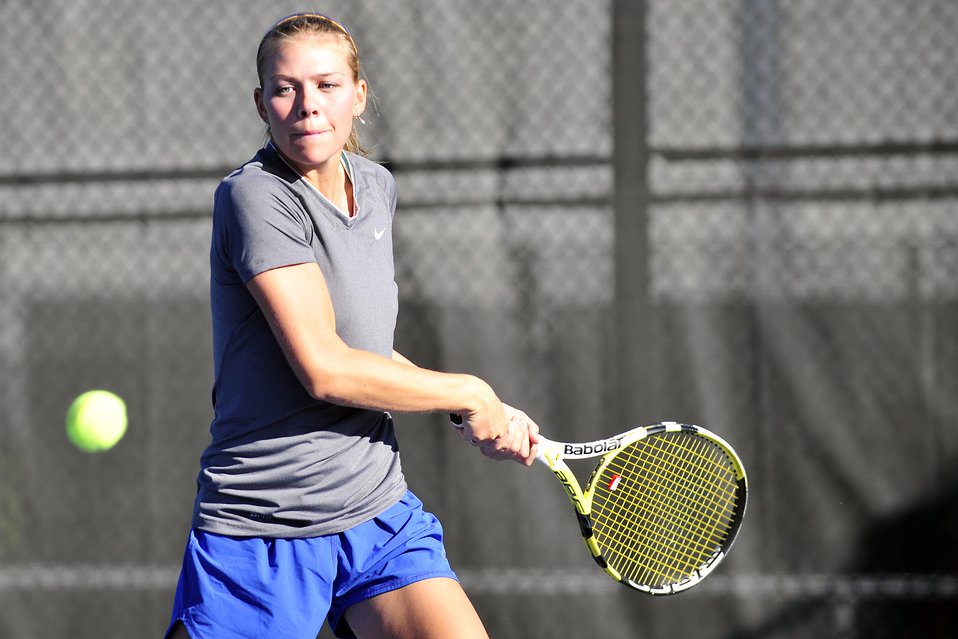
Cadets compete in tennis tournament

Air Force Academy junior Tahlia Smoke returns the ball during the